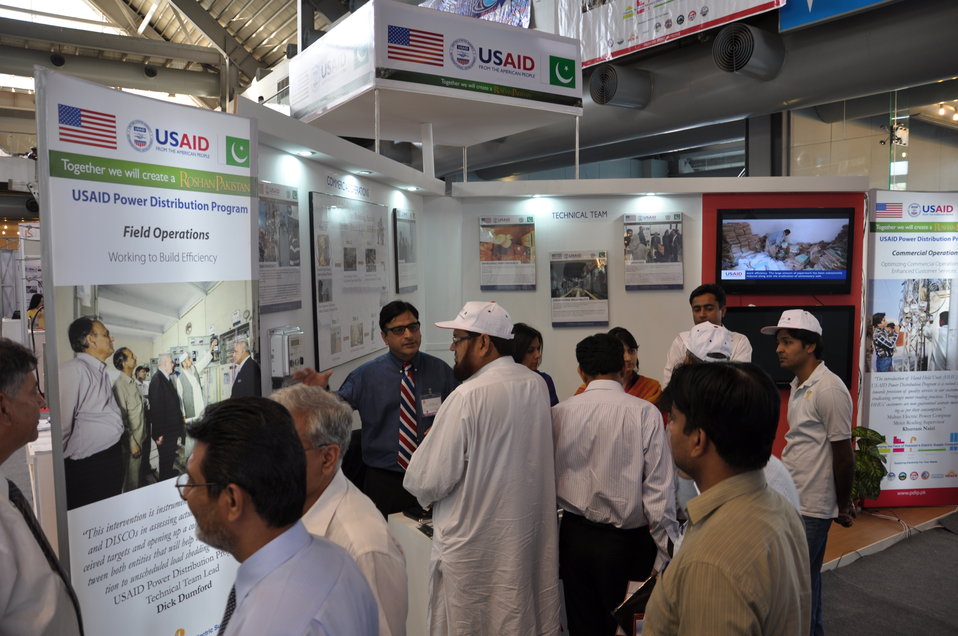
USAID participates in 11th International Pakistan Oil Gas Energy Exhibition

Visitors at the engineering stall